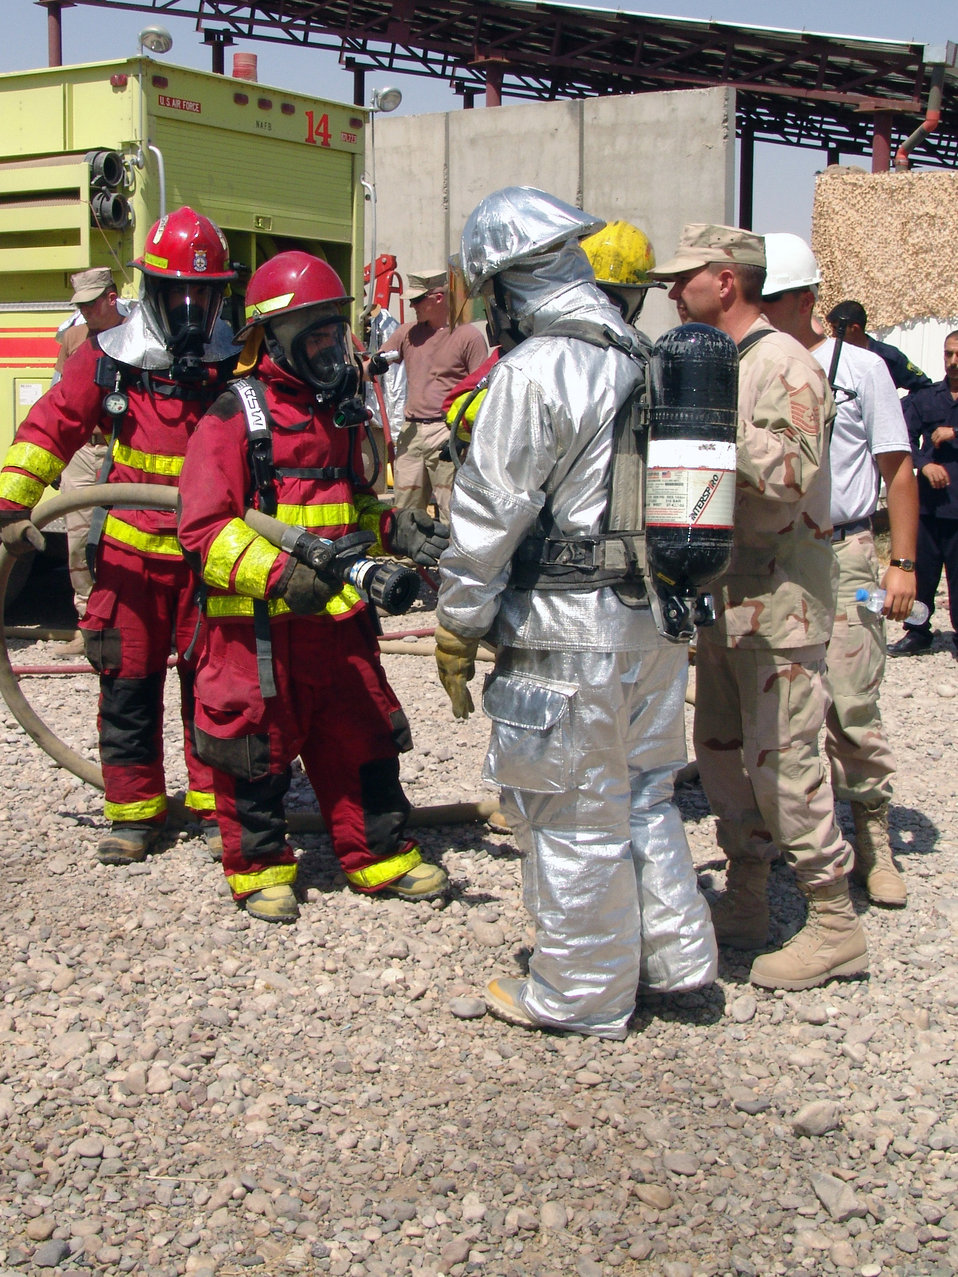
Kirkuk firefighters train Iraqis

KIRKUK AIR BASE, Iraq -- American and Iraqi firefighters discuss procedures before entering an exercise area here. Firefighters with the 506th Expeditionary Civil Engineer Squadron train oil pipeline protection personnel in first aid, cardio pulmonary resuscitation and basic firefighting skills.